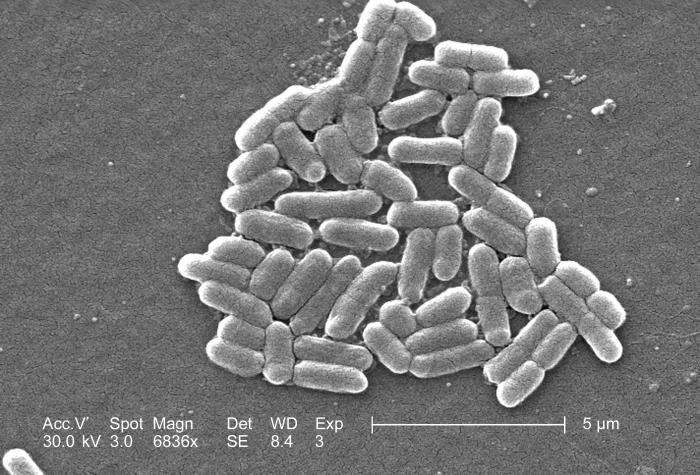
Under a magnification of 6836x, this scanning electron micrograph (SEM) depicted a number of Gram-negative Escherichia coli bacteria of the strain O157:H7, which is one of hundreds of strains of this bacterium. Although most strains are harmless, and live in the intestines of healthy humans and animals, this strain produces a powerful toxin, which can cause severe illness.E. coli O157:H7 was first recognized as a cause of illness in 1982 during an outbreak of severe bloody diarrhea; the outbreak was traced to contaminated hamburgers. Since then, most infections have come from eating undercooked ground beef.The combination of letters and numbers in the name of the bacterium refers to the specific markers found on its surface, which distinguishes it from other types of E. coli.